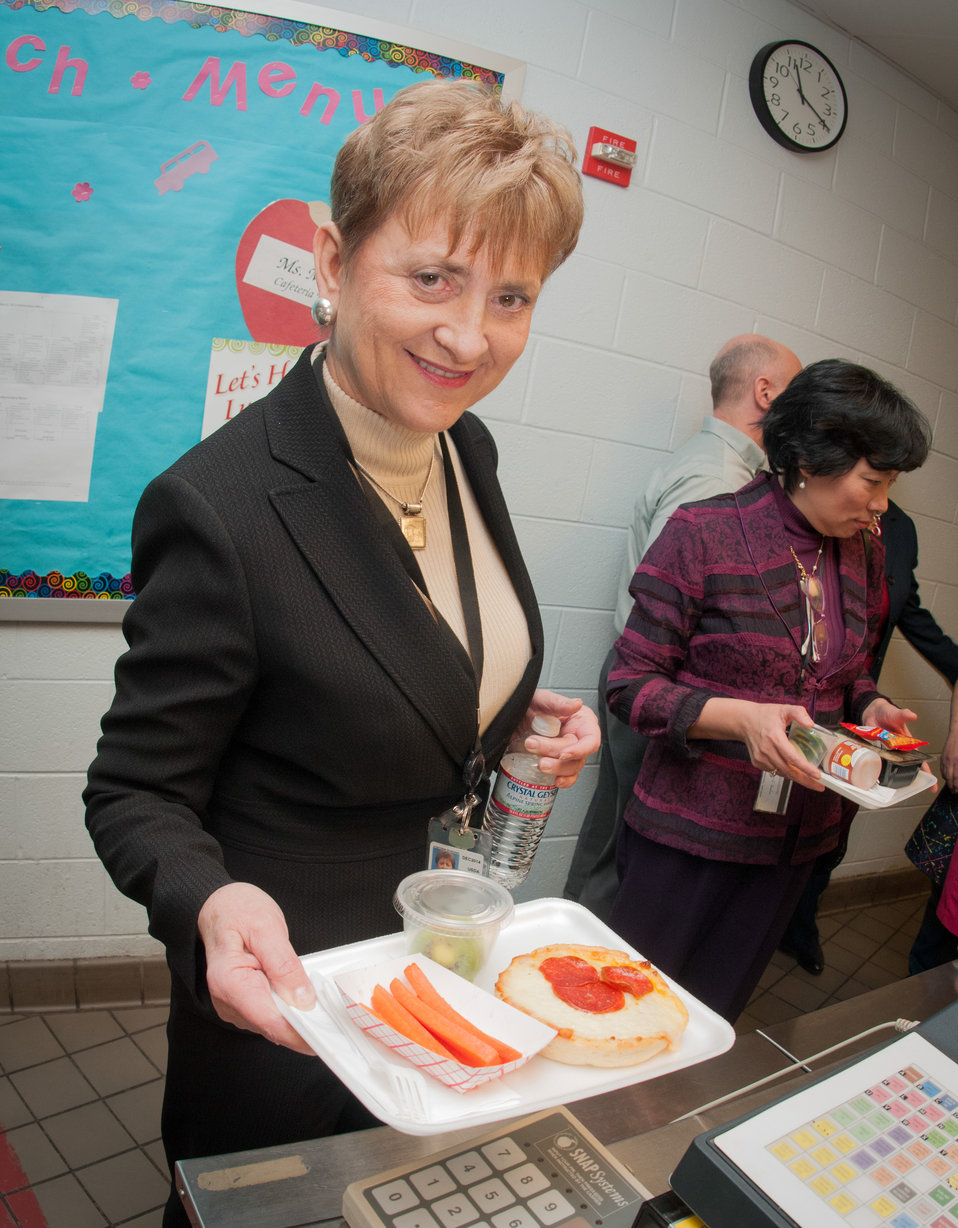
U.S. Department of Agriculture (USDA) Food, Nutrition and Consumer Services (FNS) Deputy Under Secretary Dr. Janey Thornton, with her plate selection of reduced fat / reduced salt whole-wheat pizza, carrot sticks, kiwi slices and bottled water, in Silver Spring, MD, on Thursday, March 7, 2013. Harmony Hills’ 640 students spend about 25 minutes in the cafeteria. The process requires a choreographed procession of children moving to and from the cafeteria. Earlier in the day, the students select their menu items so they know their choice when in line. Today’s entrée are reduced fat and reduced salt whole-wheat pizza, spicy chicken patty, salad and peanut butter and jelly sandwich. USDA's Food and Nutrition Service administers several programs that provide healthy food to children including the National School Lunch Program, the School Breakfast Program, the Child and Adult Care Food Program, the Summer Food Service Program, the Fresh Fruit and Vegetable Program, and the Special Milk Program. Administered by State agencies, each of these programs helps fight hunger and obesity by reimbursing organizations such as schools, childcare centers, and after-school programs for providing healthy meals to children. Harmony Hills participates in the Maryland Meals for Achievement (MMFA), In-Classroom breakfast program, the fresh fruit and vegetable program, and the summer food service program. Learn more by visiting www.fns.usda.gov and twitter @USDANutrition.